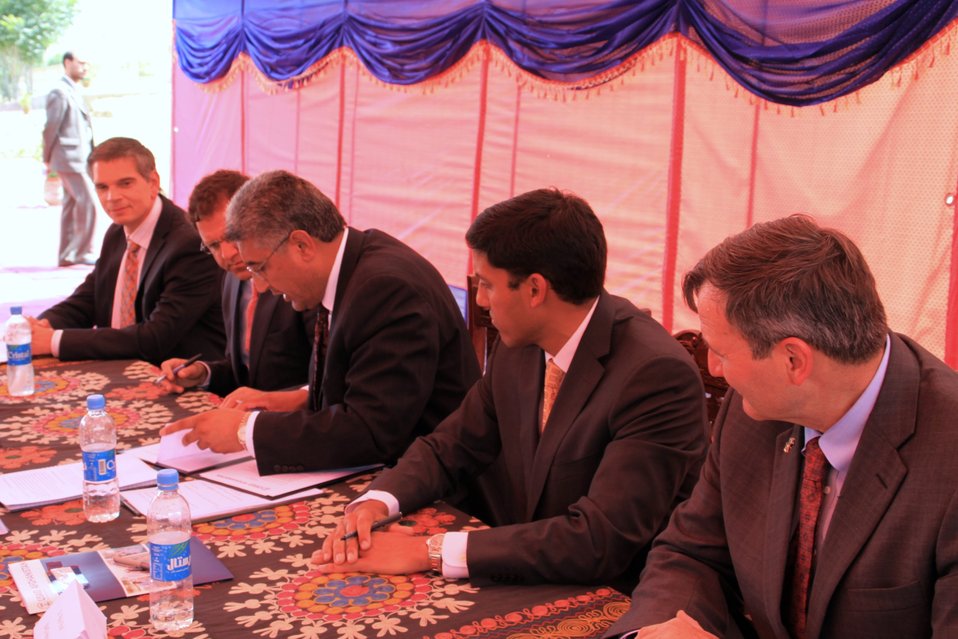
Badam Bagh Farm